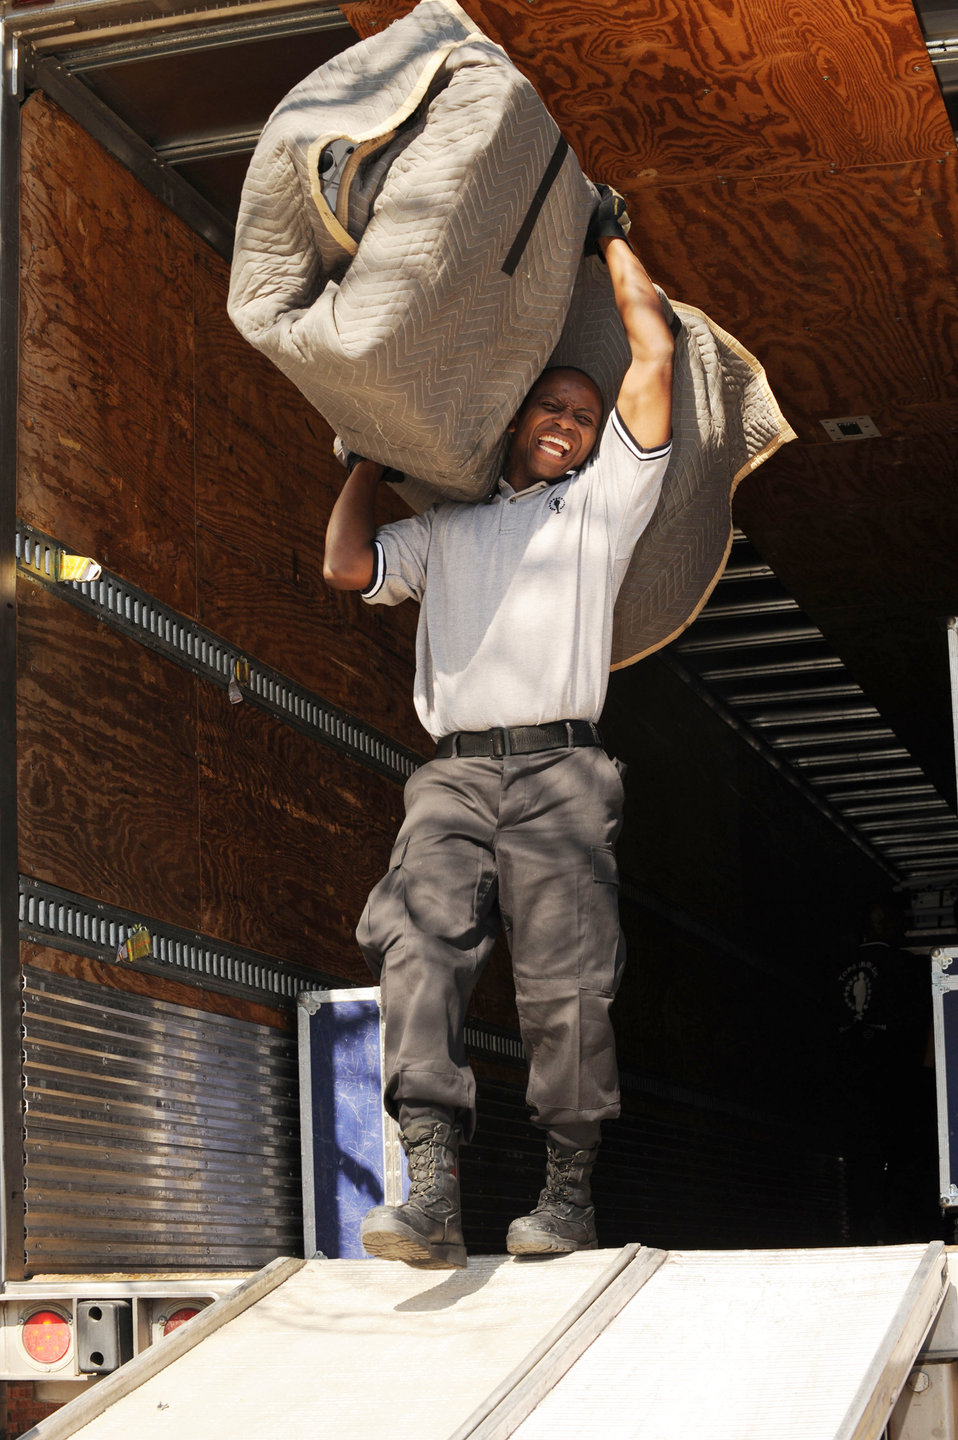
Life on the road with Tops In Blue

Tech. Sgt. Octavius Hill unloads stage equipment before performing at Patriot Hall Feb. 3, 2010, in Sumter, S.C. Sergeant Hill is a performer with Tops In Blue.